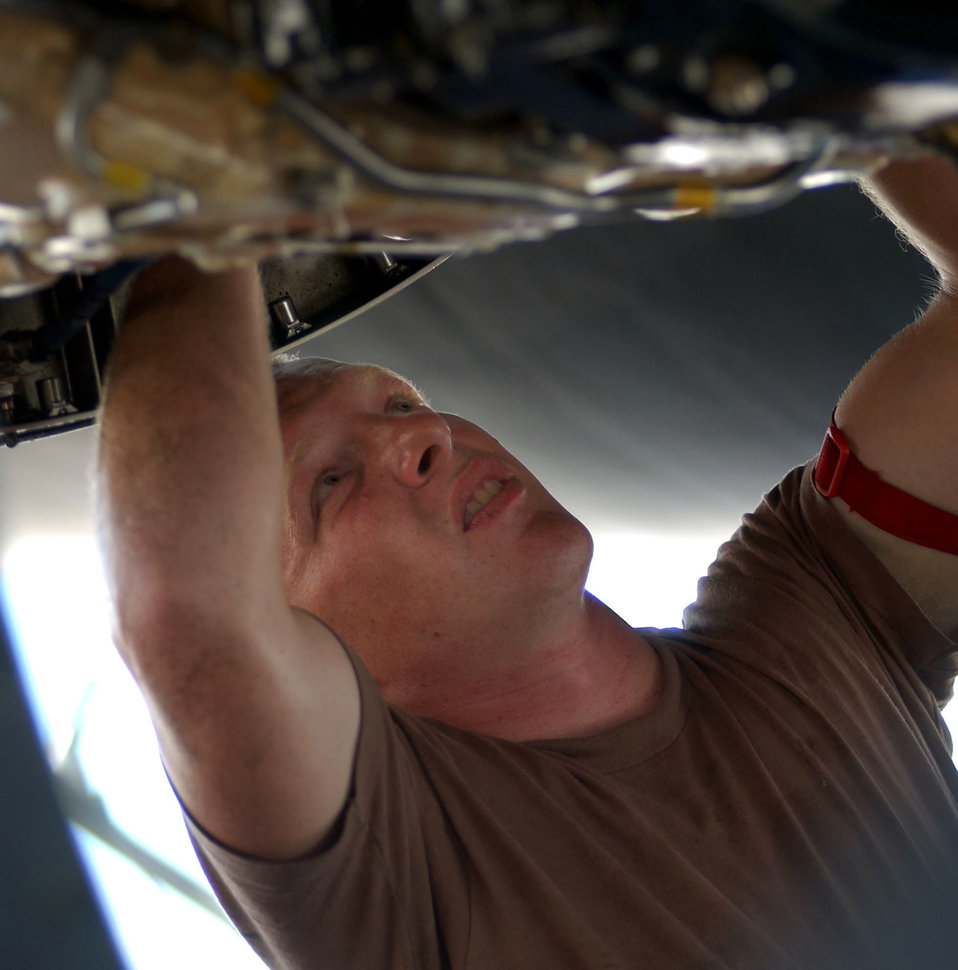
Engine service

OPERATION ENDURING FREEDOM -- An Air Force crew chief from the 28th Air Expeditionary Wing services a B-1B Lancer engine during Operation Enduring Freedom. The B-1B's blended wing and body configuration, along with variable-geometry design and turbofan engines, combine to provide greater range and high speed with enhanced survivability.